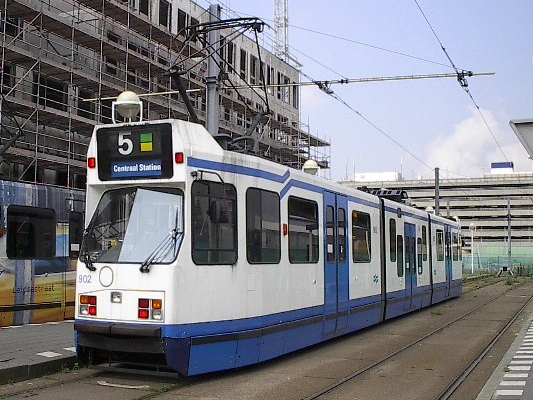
11G Amstelveen